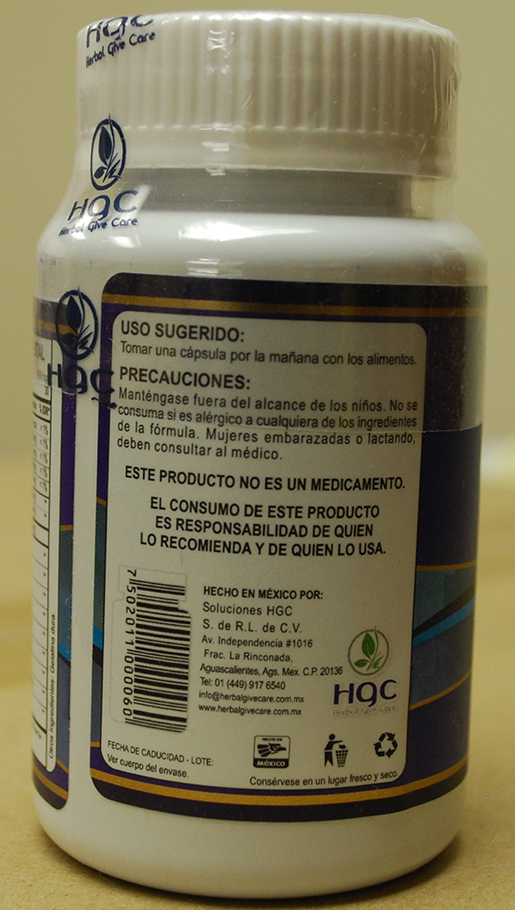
RECALLED – Dietary Supplement

July 19, 2013 – Product Recall – Herbal Give Care LLC Issues Voluntary Nationwide Recall of Esbelin Siloutte Te and Esbelin Siloutte Vitamin Supplement Due to Potential Health Risks.